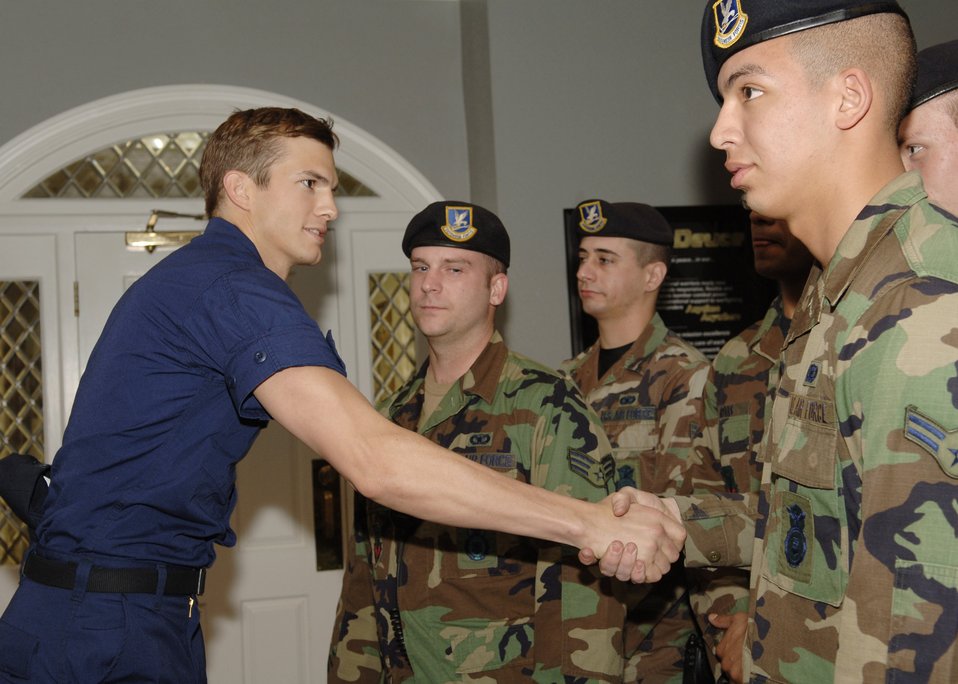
Barksdale Airmen help

BARKSDALE AIR FORCE BASE, La. (AFPN) -- Ashton Kutcher greets 2nd Security Forces Squadron Airmen. The Airmen provided security support on the set of